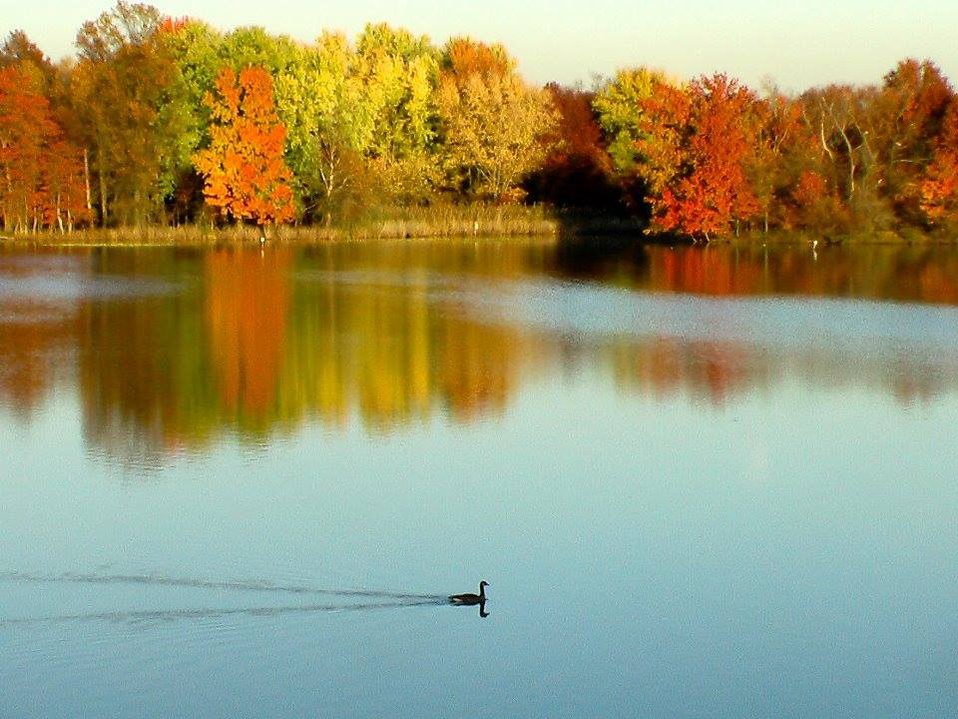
John Heinz Refuge at Tinicum